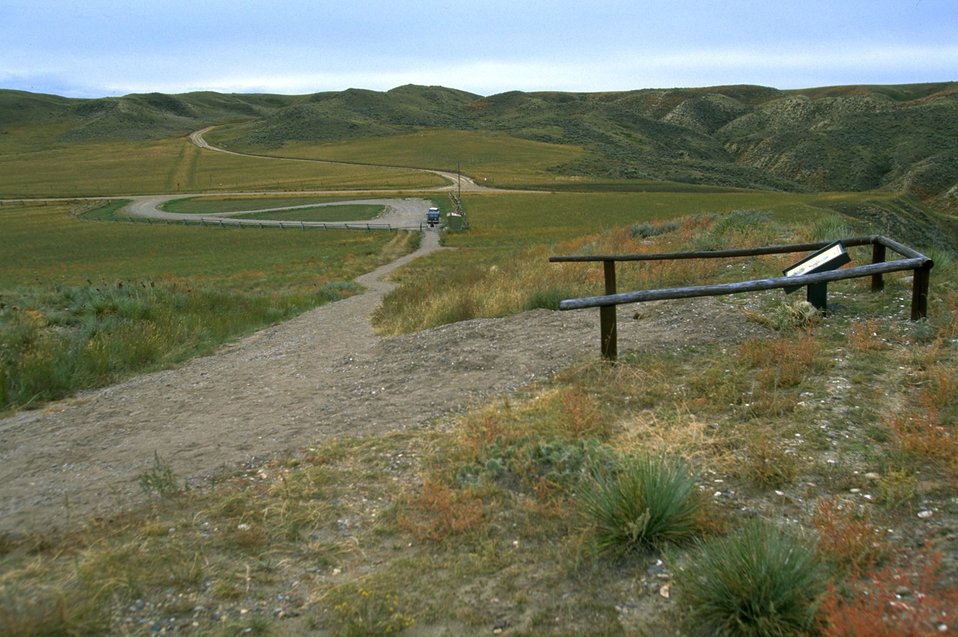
Interpretive signing at Decision Point